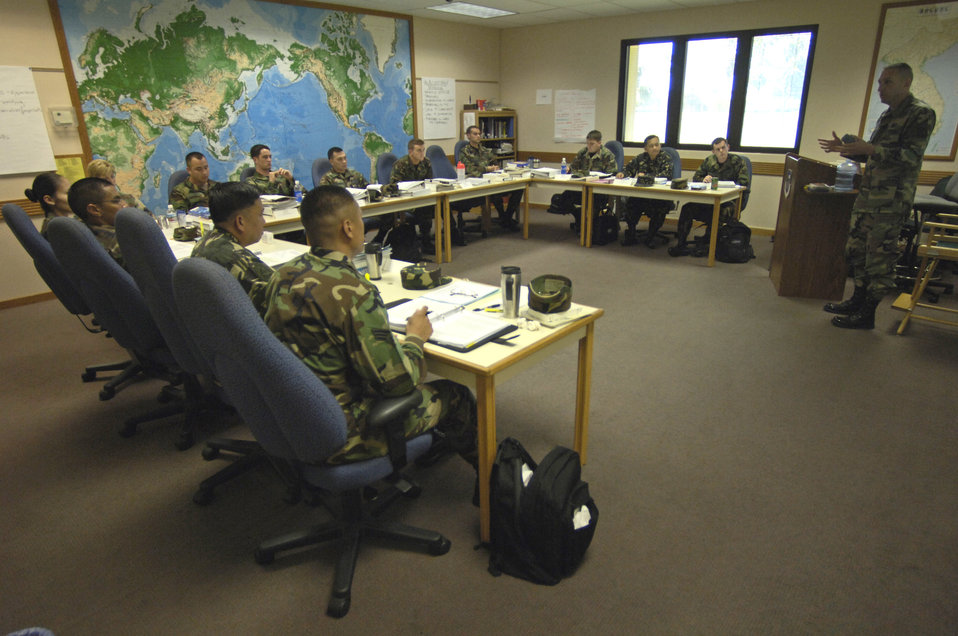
Philippine first

Master Sgt. Todd Joiner lectures on enlisted feedback during an Airman Leadership School class Tuesday, March 7, 2006, at Hickam Air Force Base, Hawaii. This class marks the first time Philippine Air Force students are attending the course. They will take back the lessons learned and develop their own leadership course within the Philippine Air Force. Sergeant Joiner is an instructor at the Hickam Professional Military Education Center.